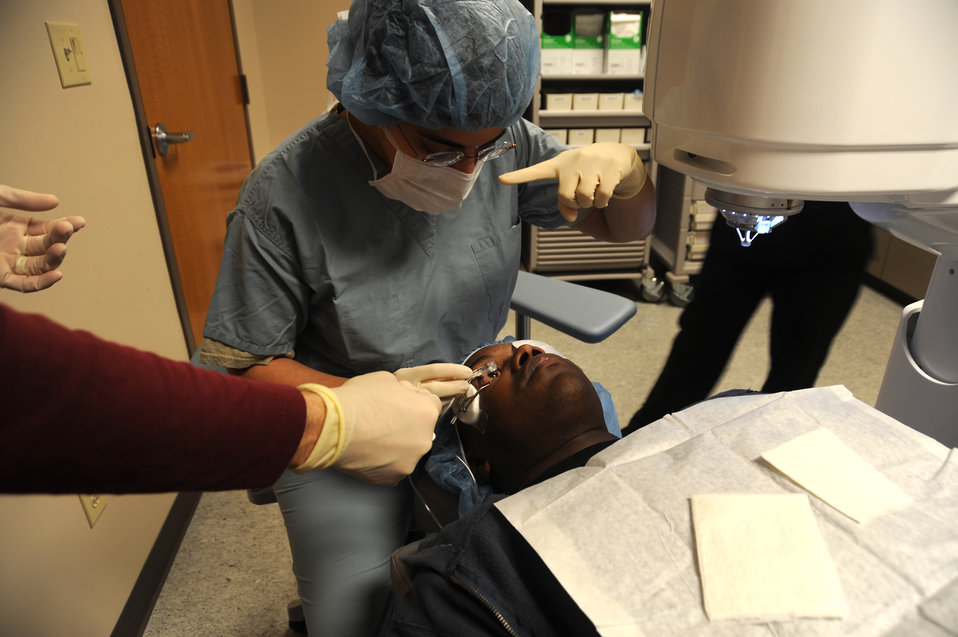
WHMC LASIK

Maj. (Dr.) Vashuda Panday prepares to cut a flap in the cornea of Army Staff Sgt. Stanley Arnold as a step in his LASIK refractive surgery March 3, 2011, at Lackland Air Force Base, Texas. Dr. Panday is the chief of cornea refractive surgery at the Joint Refractive Surgery Center and Sergeant Arnold is an instructor and infantryman at Ft. Huachuca, Ariz.